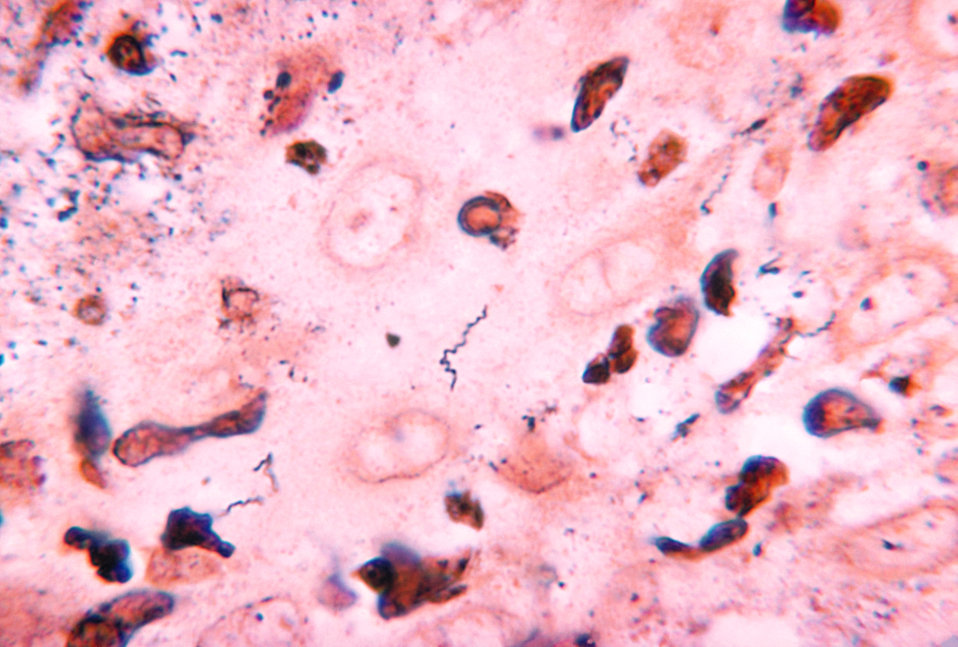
A photomicrograph revealing Treponema carateum bacteria obtained from a chimpanzee using Krajain's stain.